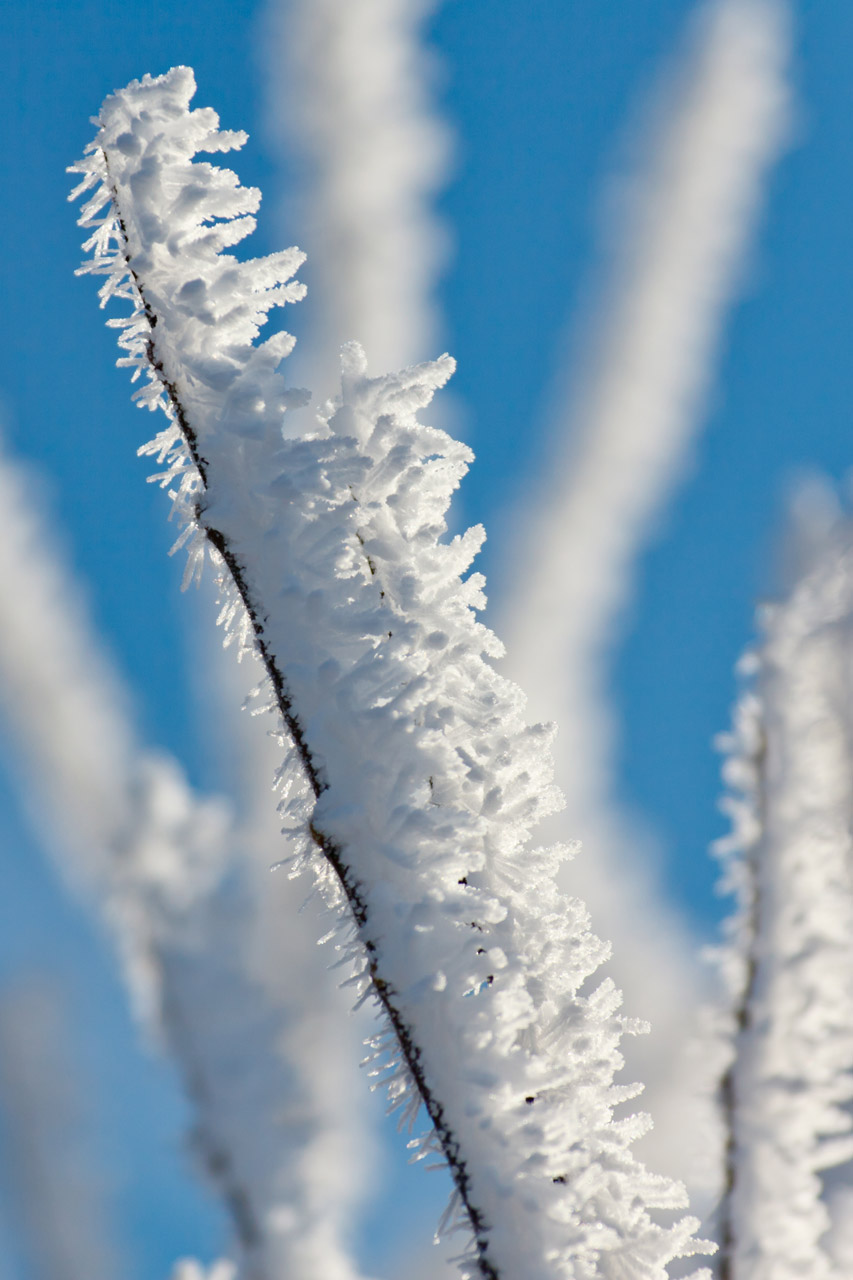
Morning frost on a branch

Hoar frost on a branch in the morning with blue sky in the background.